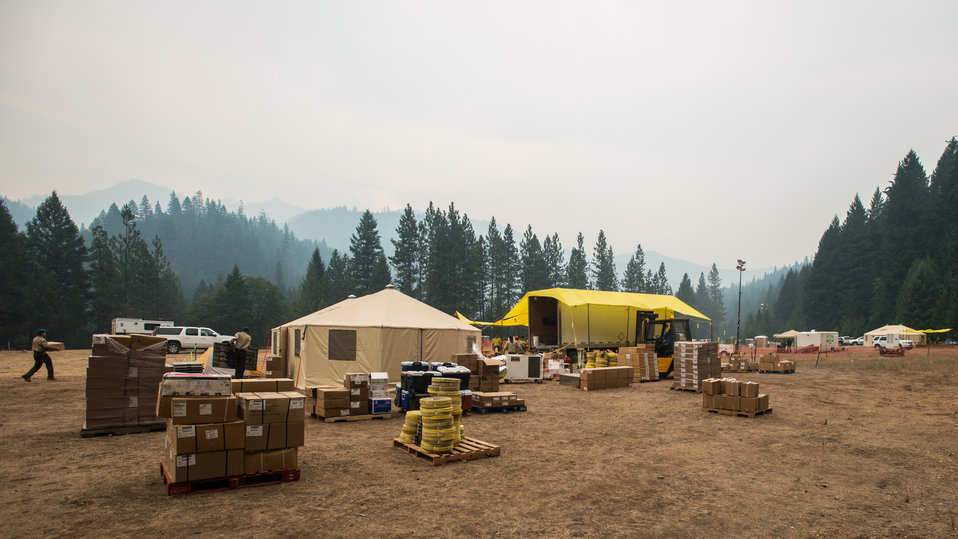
The Supply Cache is a major logistics factor in fighting the Salmon River Complex Fire burning northwest of Sawyers Bar and west of Etna and Yreka, CA in the Klamath National Forest, on Tuesday, Aug. 6, 2013. It is vital that when a firefighter needs fire resistant clothing, a Mccloud Tool, Pulaski Axe, Combi Tool, pumps, connectors and hoses to draw water from a portable reservoirs to pressurize hand line (fire hoses), they go to this centralized point to get readily available item for issue or replacement as needed. These supplies have been shipped from the National Interagency Supply Cache System depots and/or other caches to this and other fires across the nation.